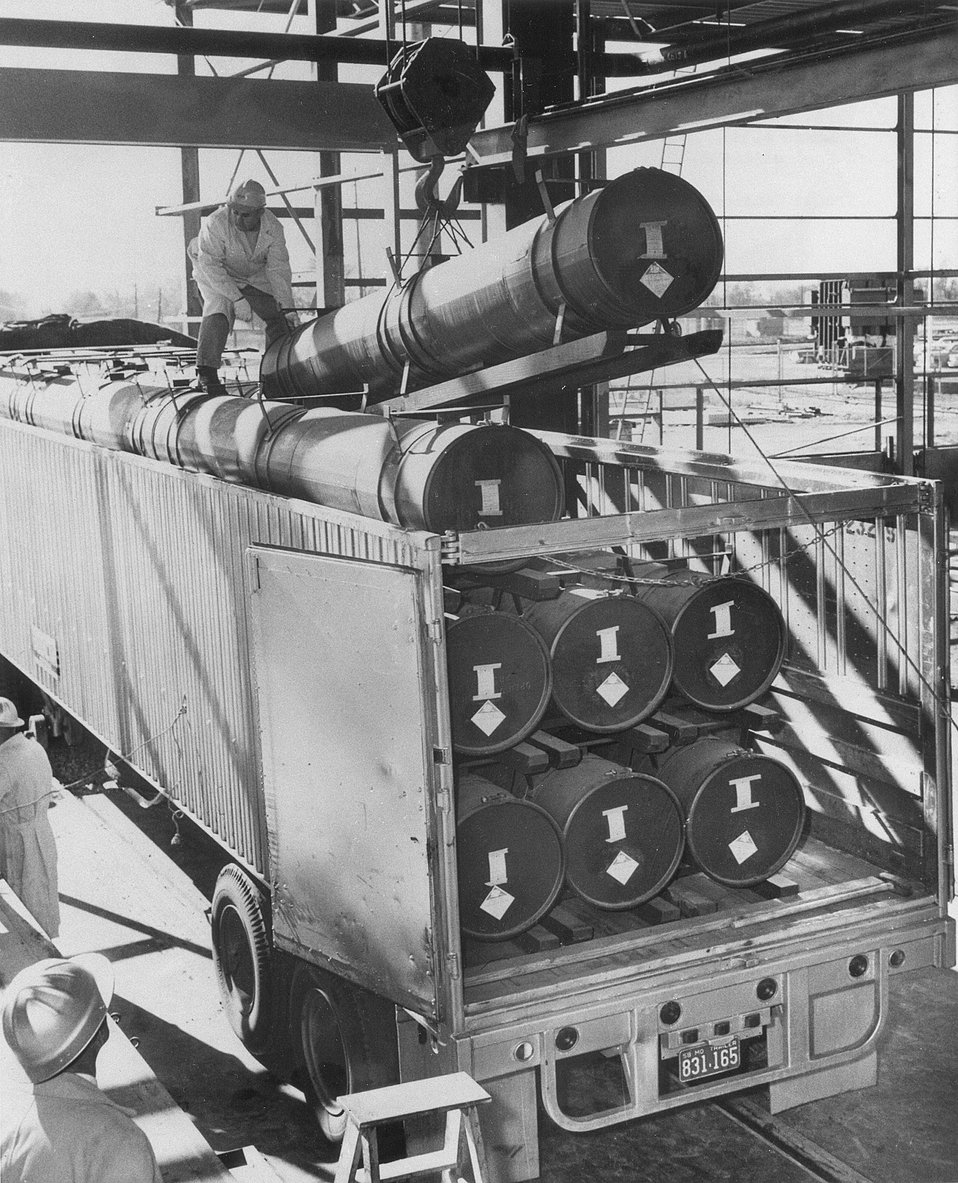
First shipment of fuel seen arriving at the Dresden site. Each shipping cylinder contains 2 fuel elements. Circa 1964.